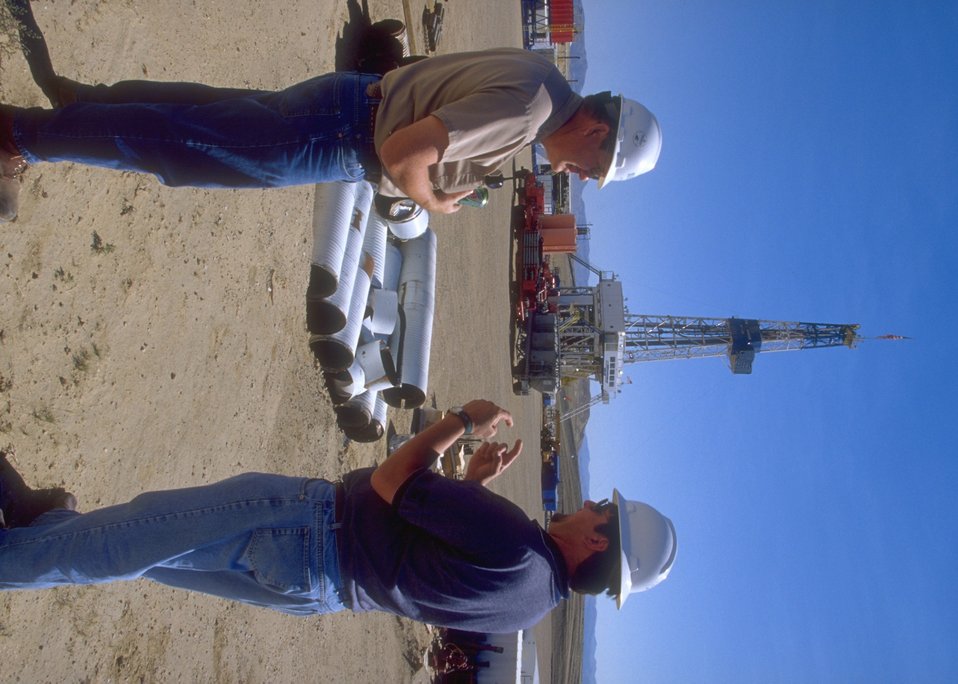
Burlington Northern deep well rig, (John McGinity CFO on right and Burlington Northern personnel on left), Casper Field Office.